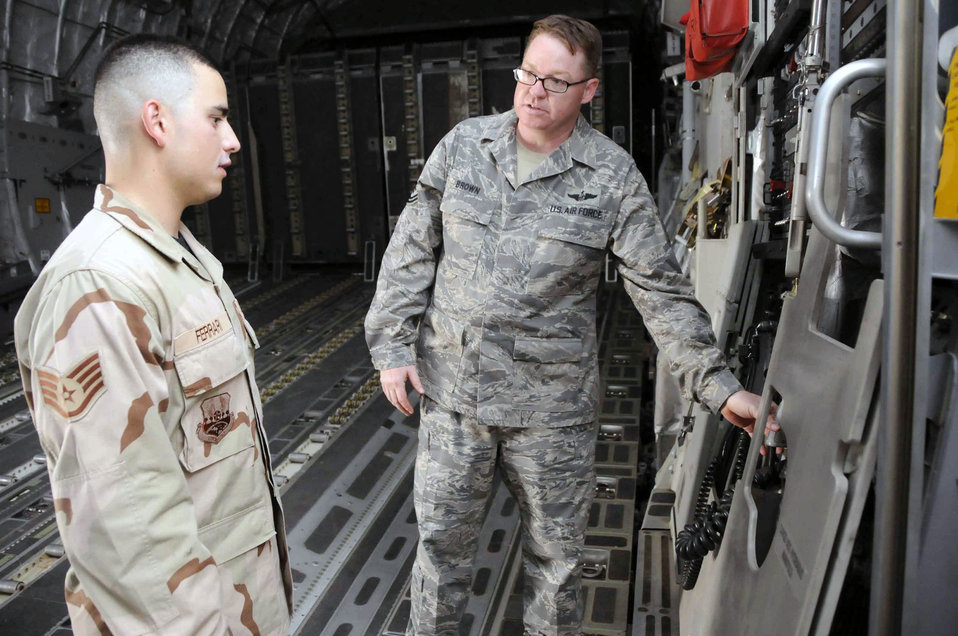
Program helps deployed Airmen with career decisions

Tech. Sgt. Robert Barton shows Staff Sgt. Jacob Pennell some radiology procedures June 24 in Southwest Asia. The Airmen are taking part in a mentor/shadow program designed to help younger Airmen who are deployed make major career decisions while far away from career advisors and other personnel specifically trained to help in those areas. Sergeant Barton is with the 379th Expeditionary Medical Group and Sergeant Pennell is with the 379th Expeditionary Maintenance Squadron.